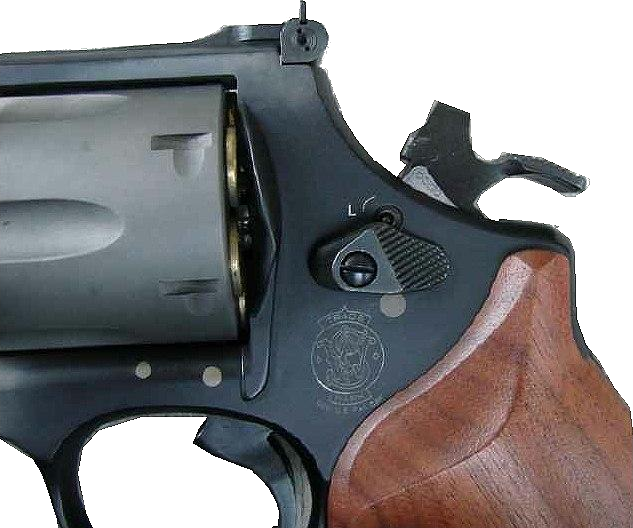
Lock failure on an S&W 329. The lock failed two times consecutively while firing 240 gr .44 Magnum loads. The hammer rebounded back part way and the flag came up temporarily tying the revolver up. The flag would drop and the revolver would function normally after the hammer was pulled back to release the tension on the locking mechanism. The cylinder did not rotate, the just fired brass was still under the firing pin.